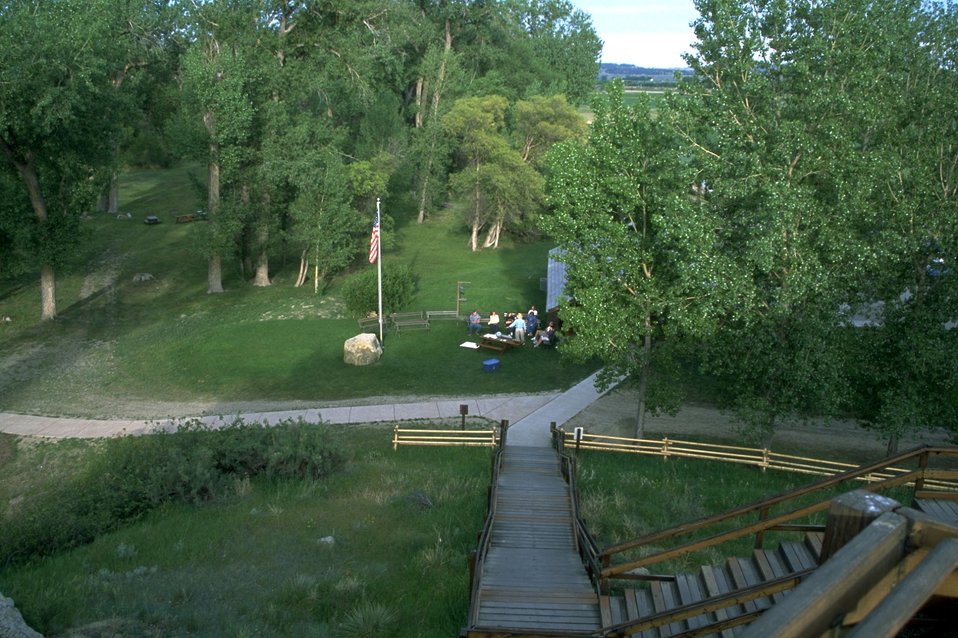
Looking down from the Boardwalk at the intepretive program at Pompeys Pillar